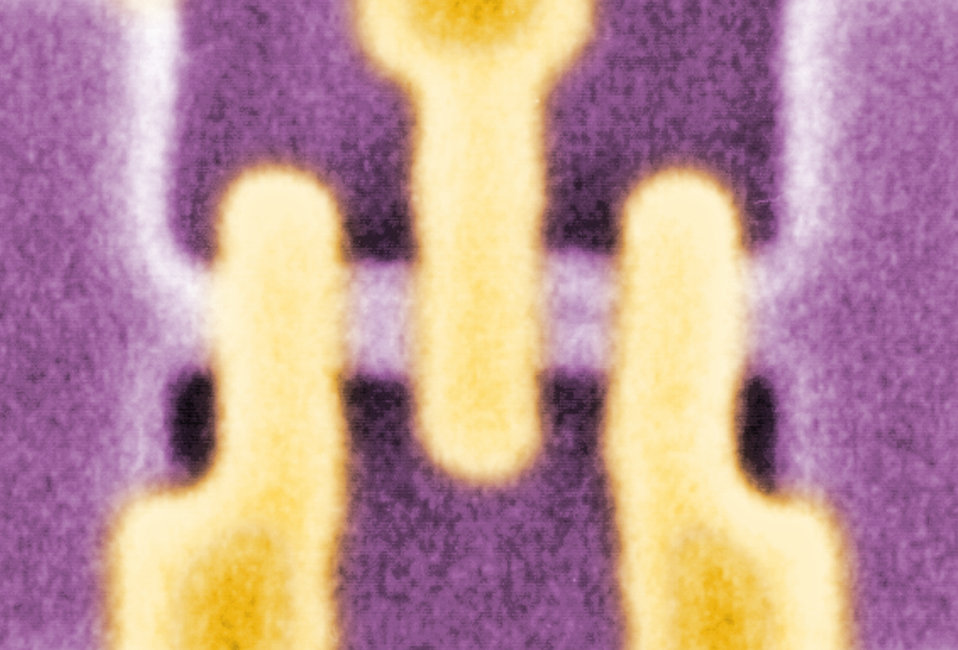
New Design for Transistors Powered by Single Electrons

Colorized micrograph of three tunable gates across an electrical channel in a single electron tunneling (SET) transistor.